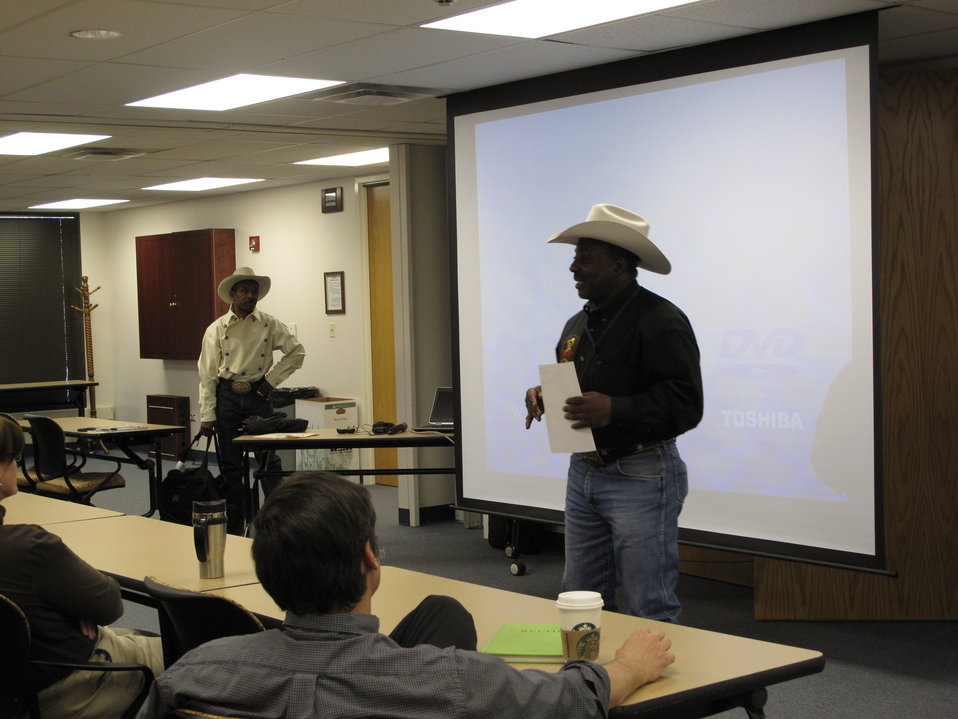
Maurice Wade introduces Charles Sampson